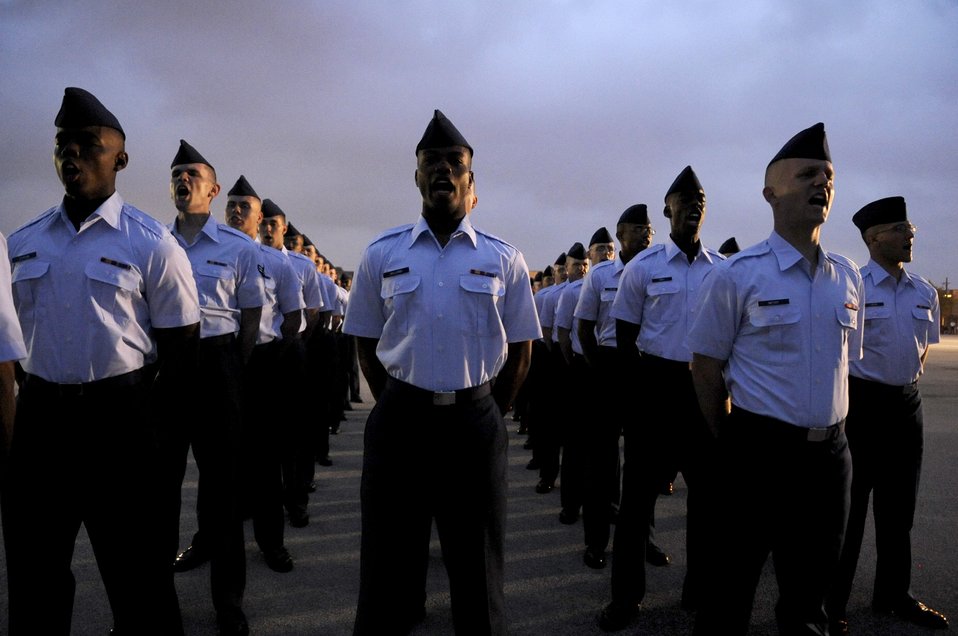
From basic trainee to Airman

Basic trainees formed up early to prepare to march to the parade grounds at Lackland Air Force Base, Texas, April 24 for their graduation ceremony.